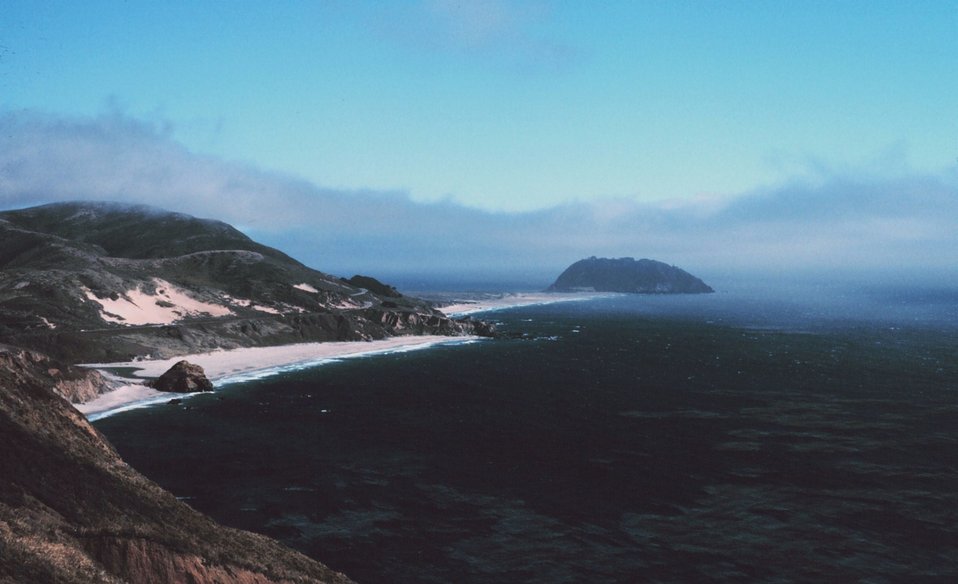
Coastal fog creeping in to Point Sur, about 25 miles south of Carmel